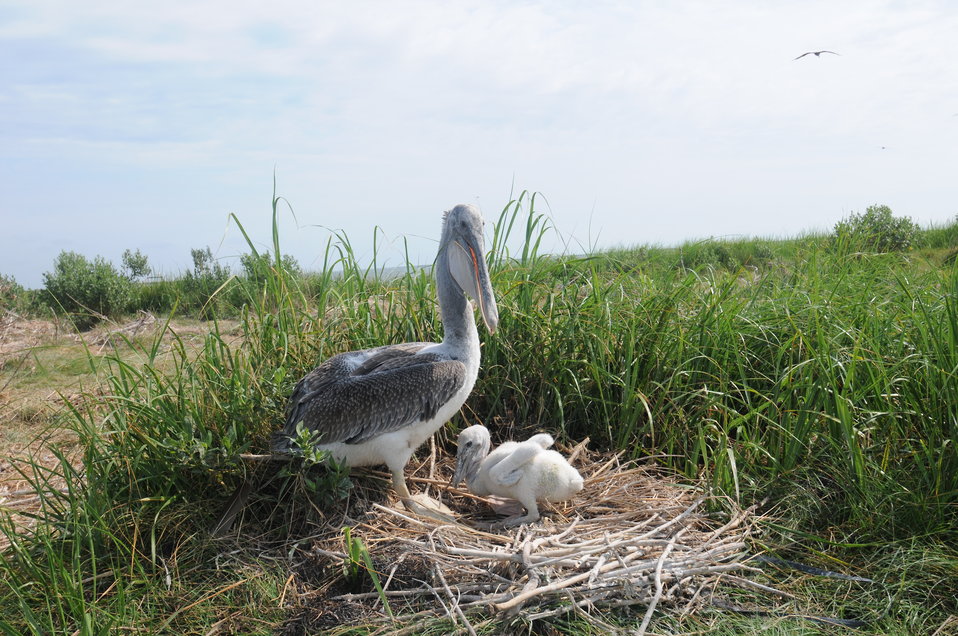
Brown pelican adult and chick

Brown Pelican and chick on nest at Smith Island in Chesapeake Bay.